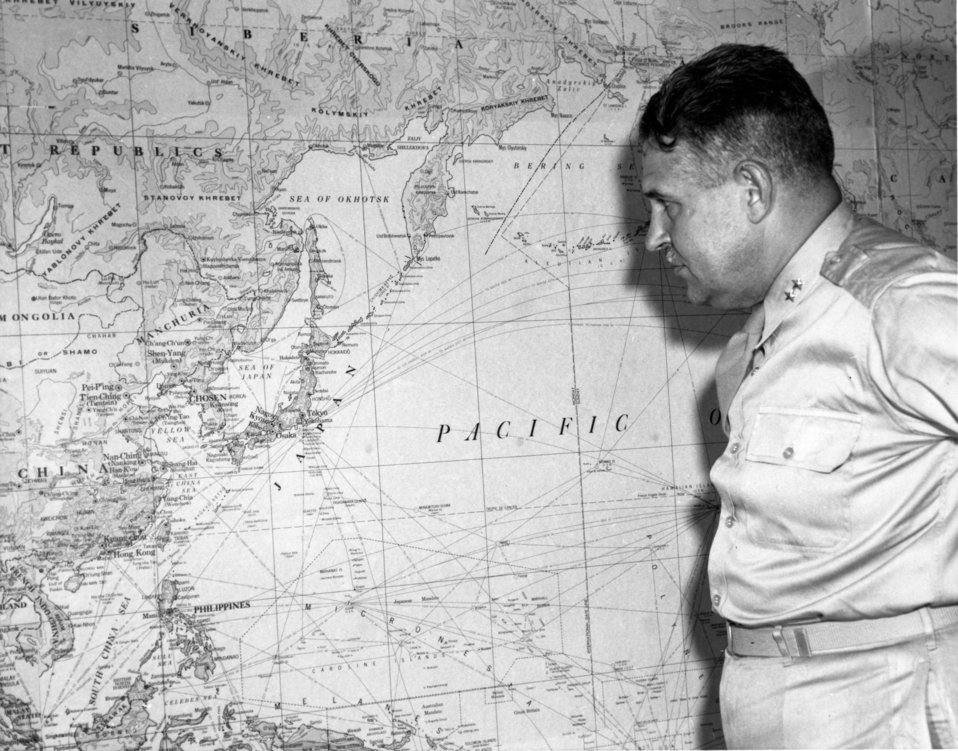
General Groves at Oak Ridge